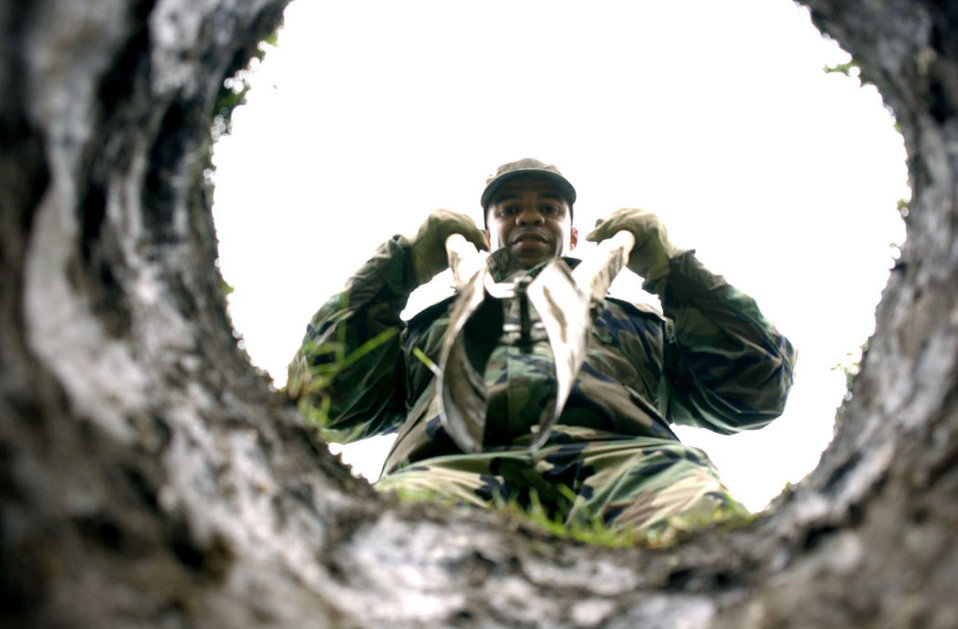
Digging for gold

ROYAL AIR FORCE MILDENHALL, England -- Tech. Sgt. Alton Chin-Shue digs a post hole for a fence that the 116th Civil Engineer Squadron is building for the 100th CES here. Sergeant Chin-Shue is assigned to the 116th Medical Squadron.